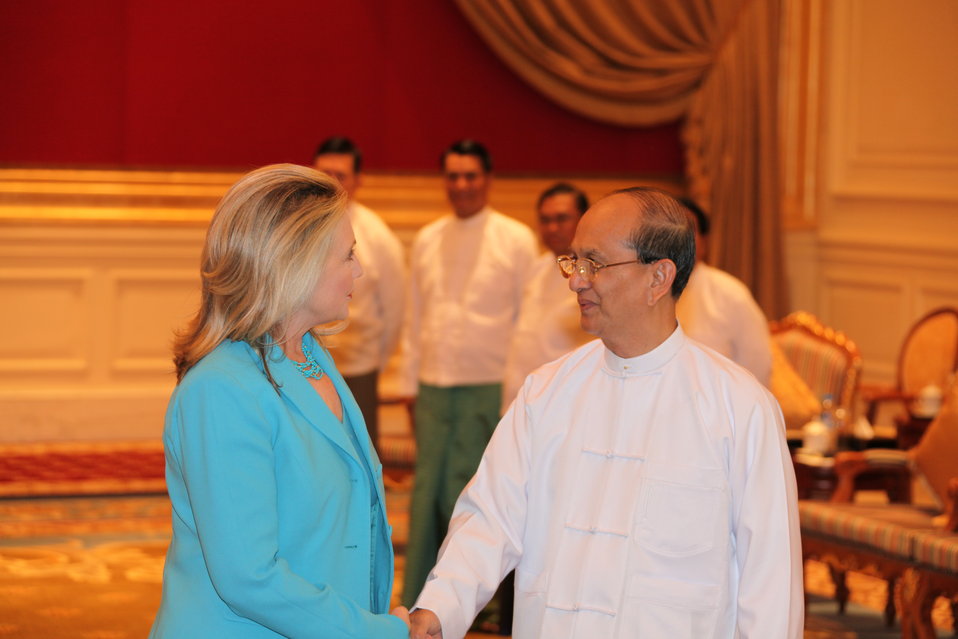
Secretary Clinton Meets With Burmese President U Thein Sein

U.S. Secretary of State Hillary Rodham Clinton meets with with Burmese President U Thein Sein at the Office of the President in Nay Pyi Taw, Burma, on December 1, 2011.